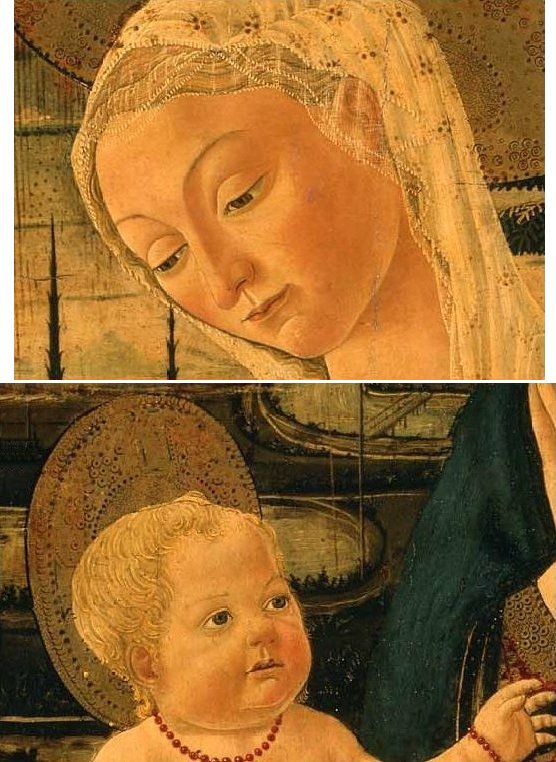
'Virgin and Child with an Angel' (details)- Bernardo di Stefano Rosselli or Master of the Via Romana Lunette